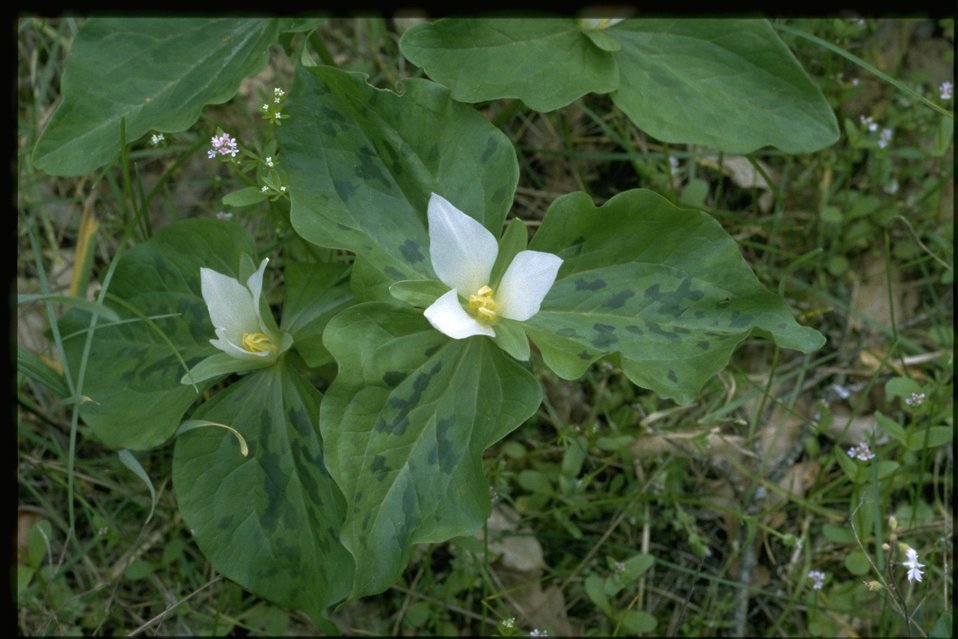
Medium shot of Trillium albidum.